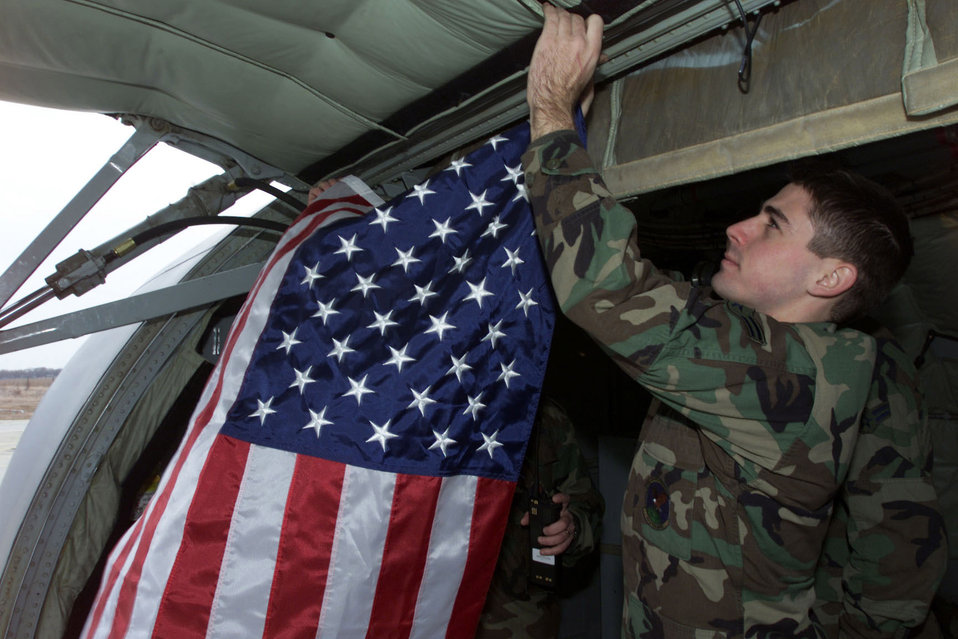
Flying the flag

OPERATION ENDURING FREEDOM -- Airman 1st Class Nicholas Hoy, a KC-135R Stratotanker crew chief from the 100th Aircraft Generation Squadron at Royal Air Force Mildenhall, England, hangs a flag inside a KC-135 prior to flying an aerial refueling mission from an operating location in support of Operation Enduring Freedom on Dec. 7.